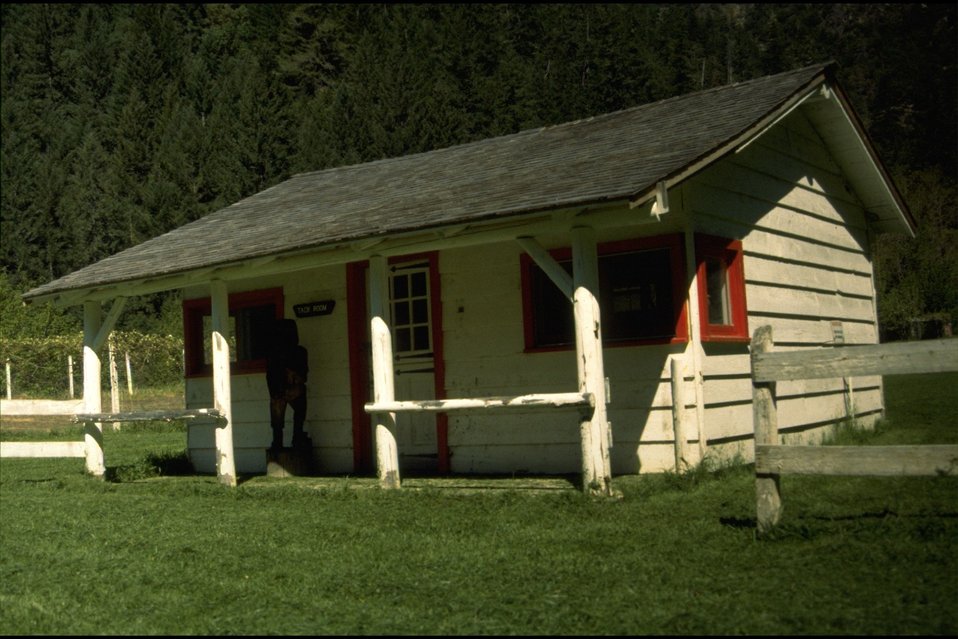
Rogue River Ranch - Tack House.